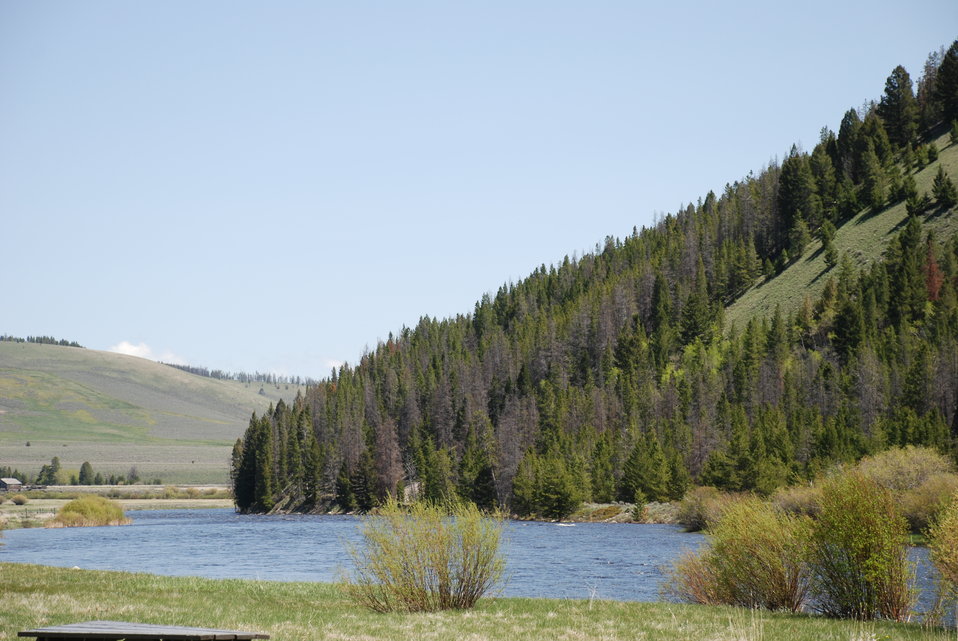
Regional Leadership Visit to Montana 2014